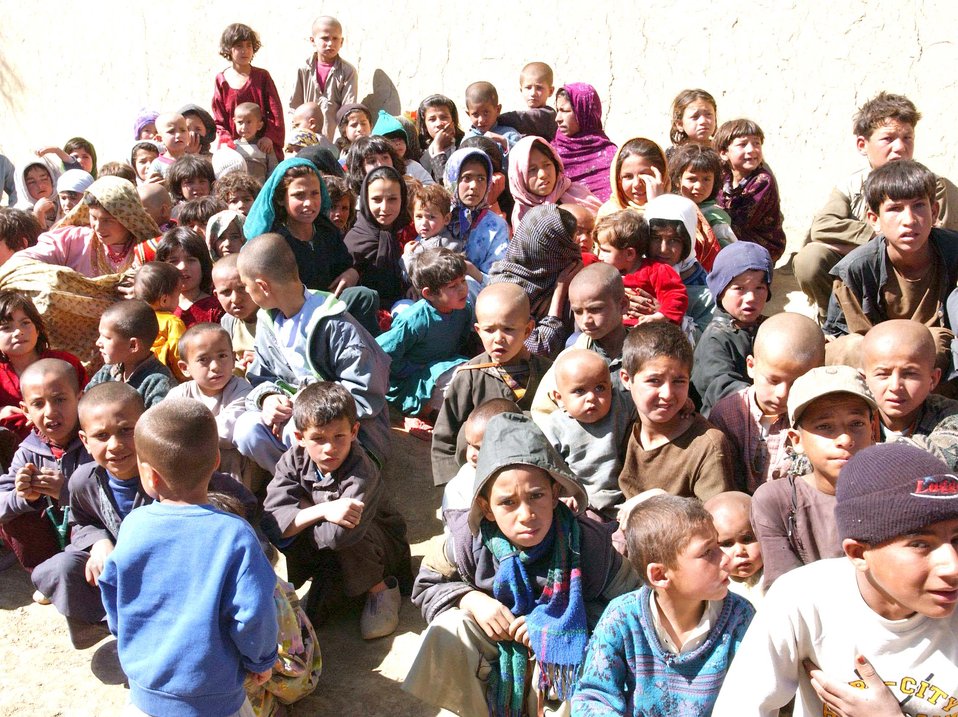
Airmen adopt-a-village or two

JA FARKEL, Afghanistan - Afghan children sit quietly as they wait for Airmen from the 455th Air Expeditionary Wing at nearby Bagram Air Base to hand out school supplies and toys.